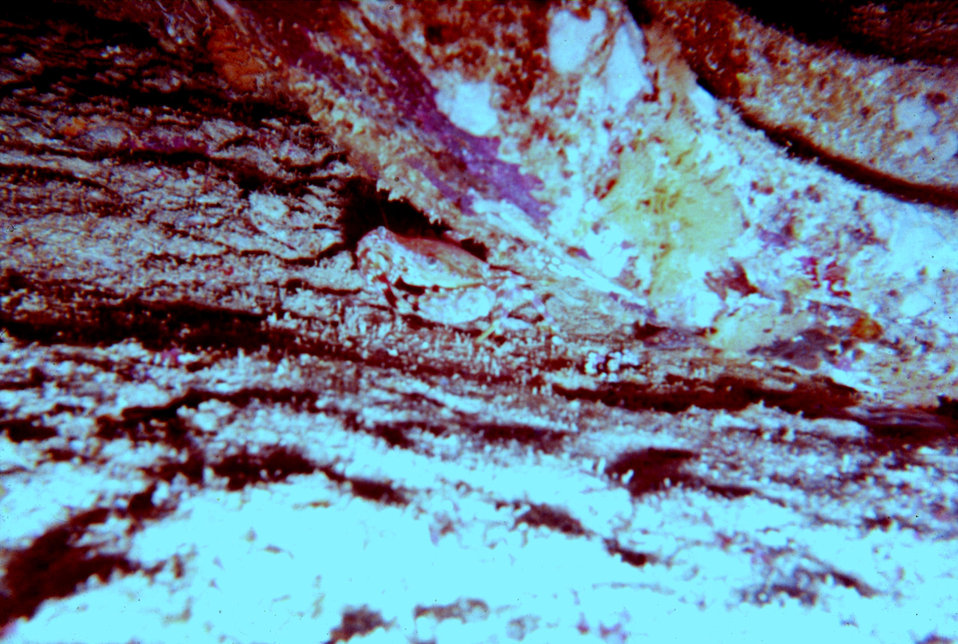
Can you find the crab in the artificial reef habitat?